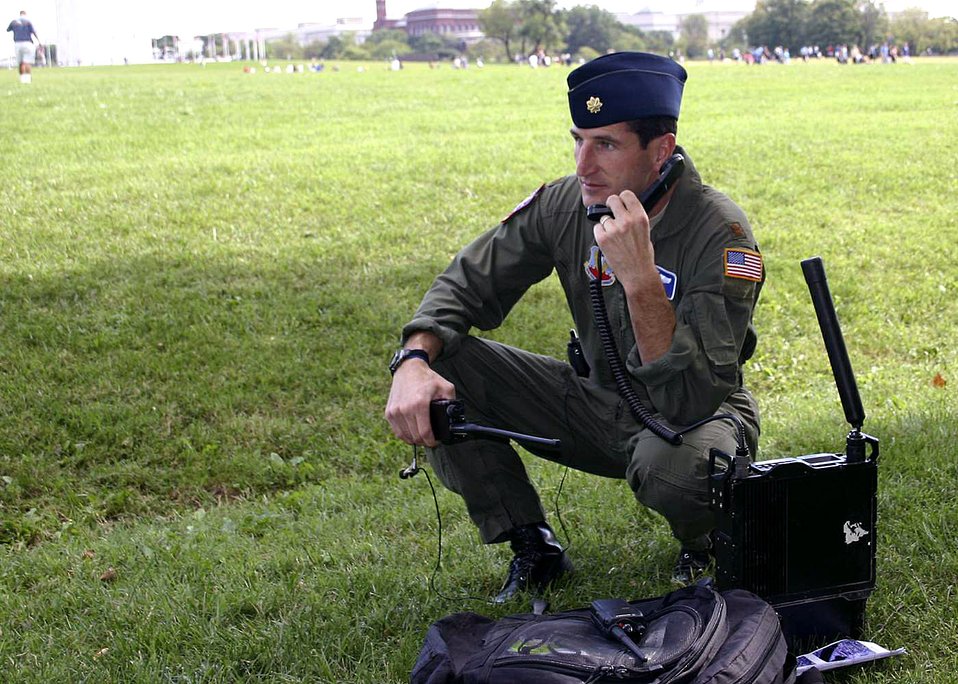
Airmen honor America's fallen

Maj. Mike McHugh coordinates a flyover of three F-15 Eagles from the 33rd Fighter Wing from Eglin Air Force Base, Fla., Sept. 20 in Washington, D.C. Major McHugh is assigned to Air Combat Command headquarters at Langley AFB, Va.